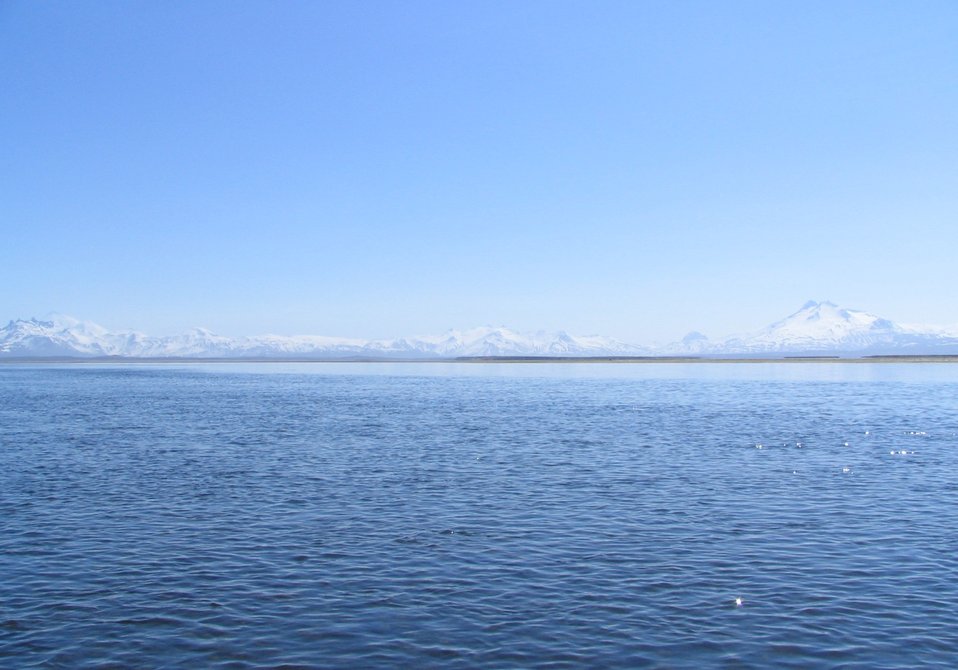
Kinzarof Lagoon, Izembek National Wildlife Refuge